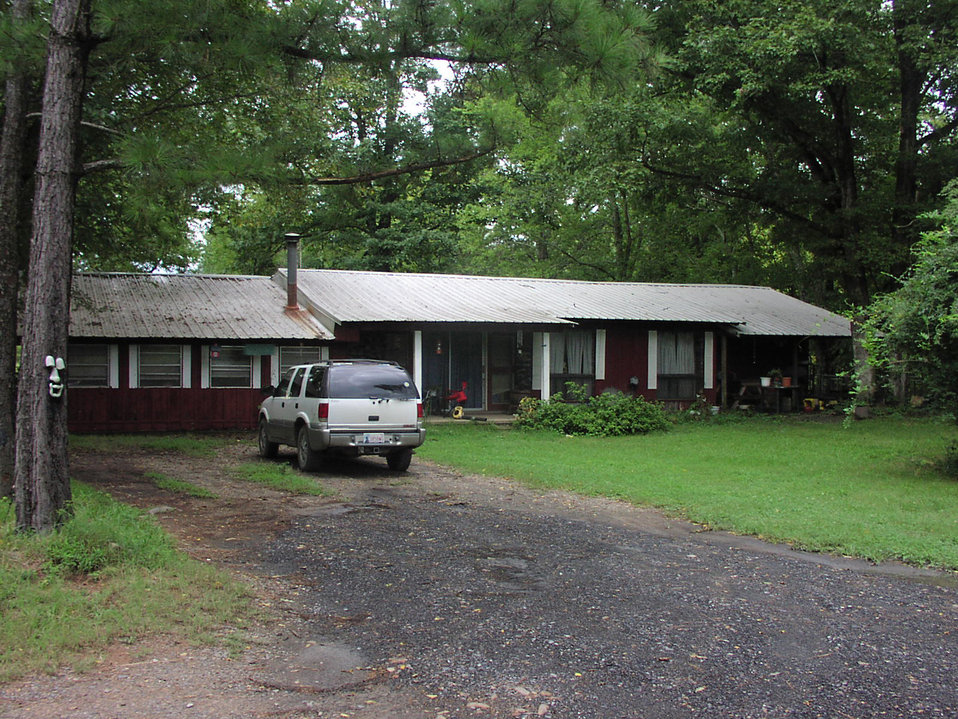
The home of Debbie Prise an employee of McCurtain County Water District No. 6. Debbie must choose between washing her dishes or doing laundry because of the low supply of water. She and her husband take showers at a nearby church. They must use bottle water for drinking. ARRA funds ($11,229,3.00.00)have been provided to the county to build a water line and water tower to end the lack of potable water for McCurtain County residents.